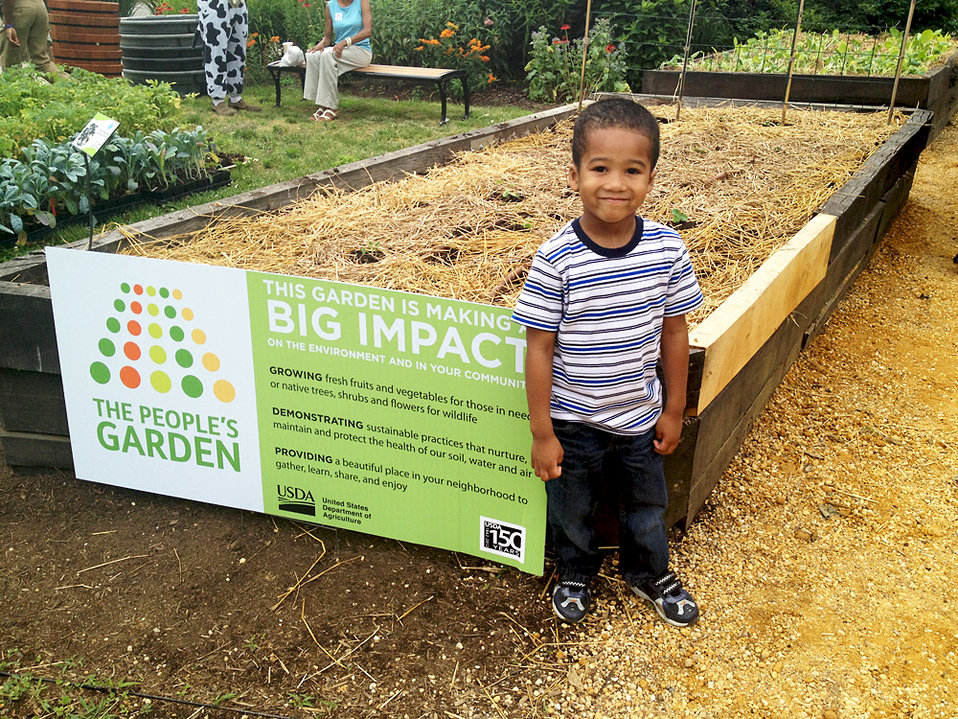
Bronson Brown stands in front of the People’s Garden at U.S. Department of Agriculture (USDA) Headquarters in Washington, D.C. on the opening day of the USDA Farmers Market on June 1, 2012. Children had the opportunity to participate in a day filled with hands-on activities to help enhance their commitment to healthy eating and 60 minutes of physical activity every day.